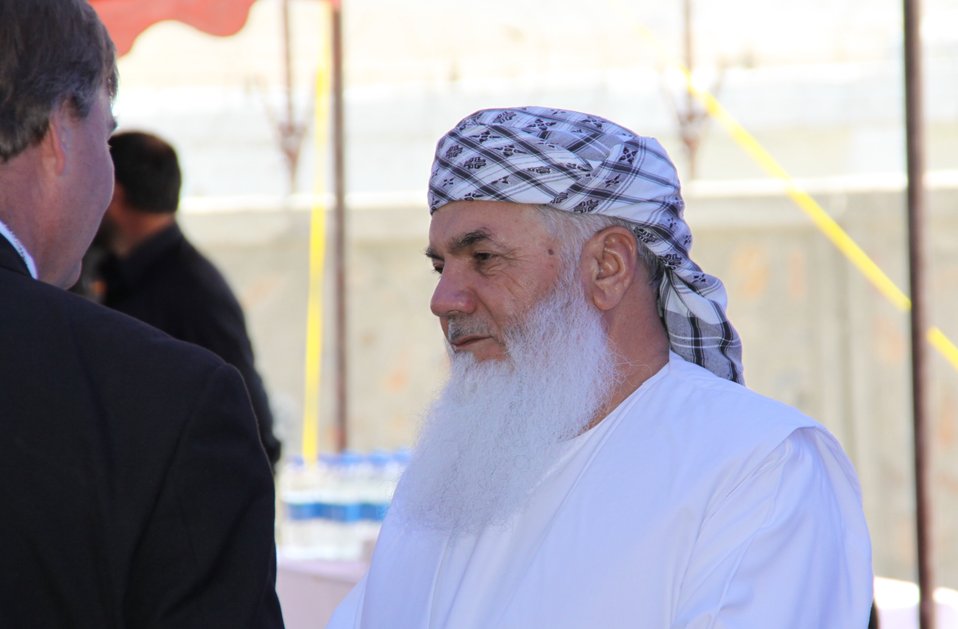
105 MW Tarakhil Power Plant Handover